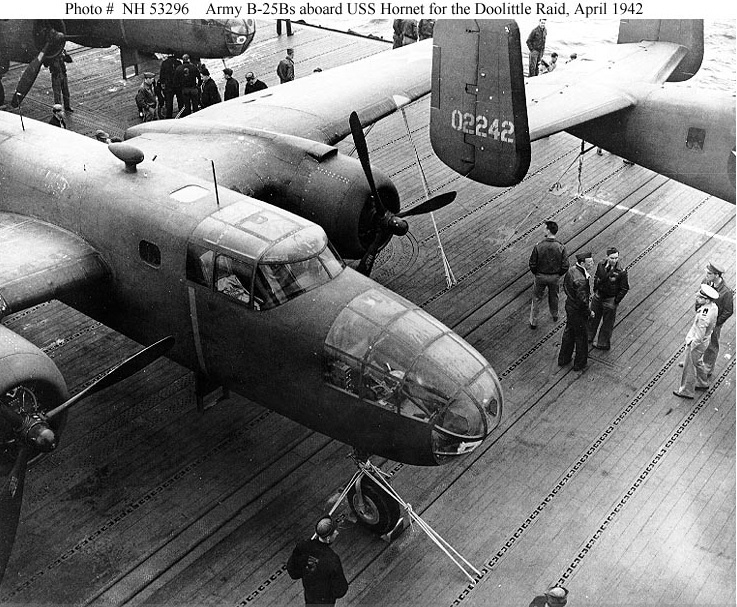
Doolittle Raid

Army Air Forces B-25B bombers parked on the flight deck of USS Hornet (CV-8). The plane in the upper right is tail No. 40-2242 and mission plane No. 8. Capt. Edward J. York piloted the aircraft to targets in the Tokyo area. .